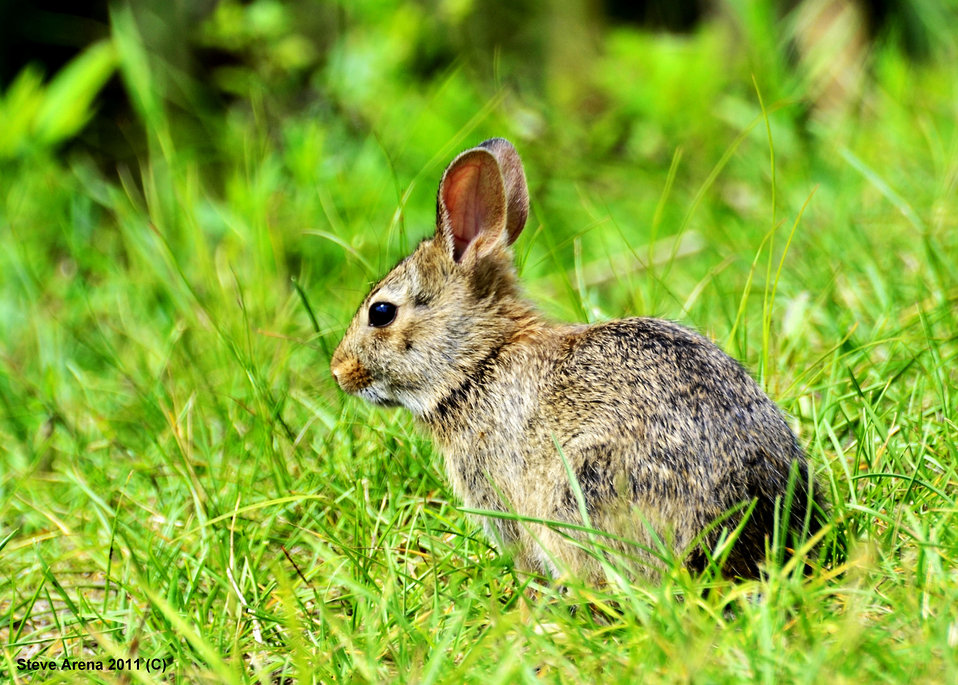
Young Cottontail species (Sylvilagus floridarius) along dike 10 June 2011

Eastern cottontail at Great Meadows National Wildlife Refuge.